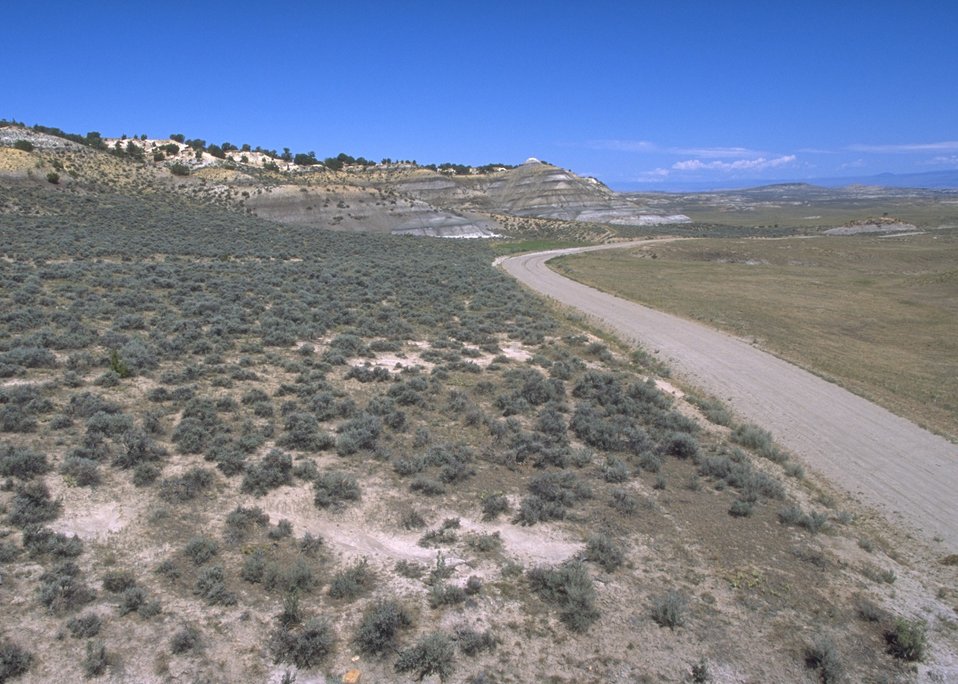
View from Cedar Ridge Paleo area looking north, Worland Field Office.